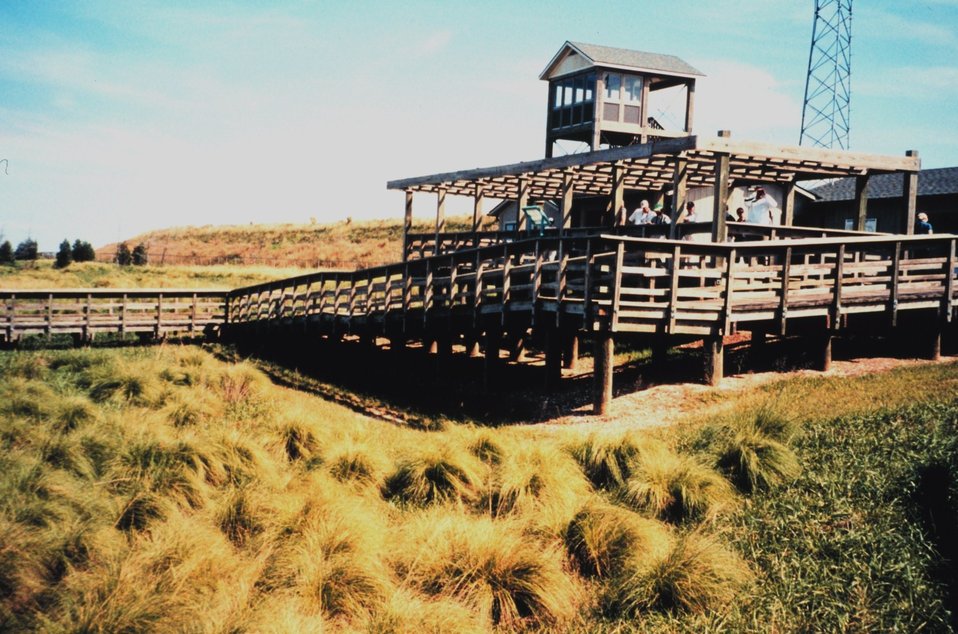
Hart-Miller Island, once two islands that nearly eroded into extinction, are now one. They are being regenerated and enlarged with dredge spoils from Baltimore Harbor. Recreation area on what is left of the original Miller's Island is popular with Baltimore area boaters.